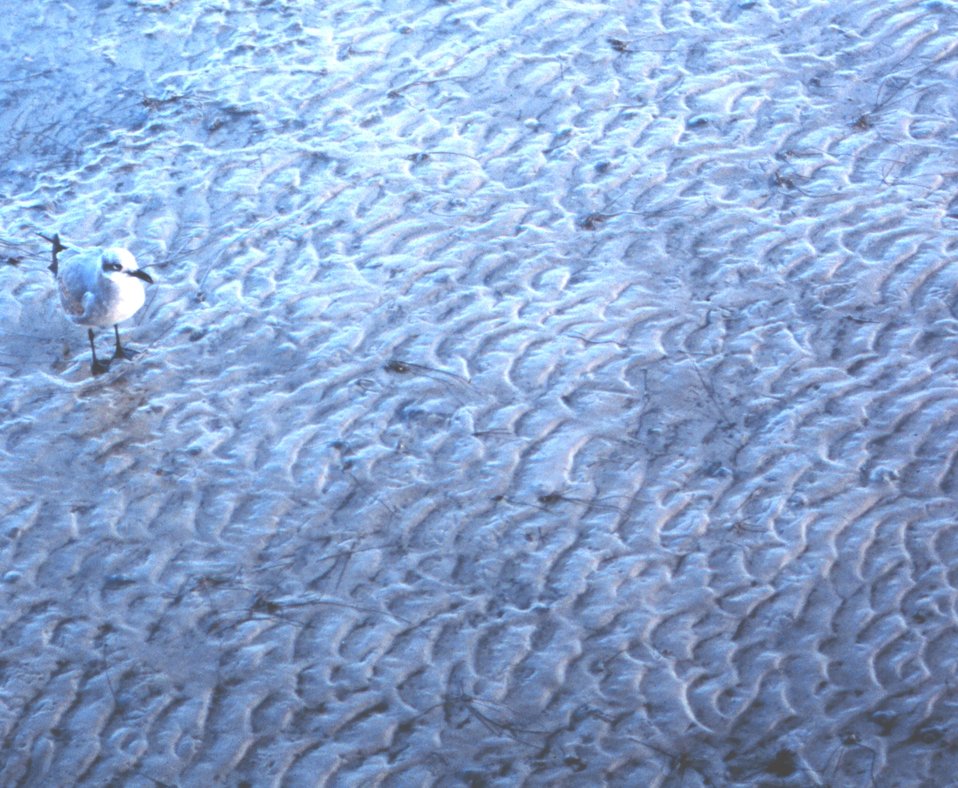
Gull on a sandy bottom area at low tide. Ripples indicate fairly high energy tidal currents.